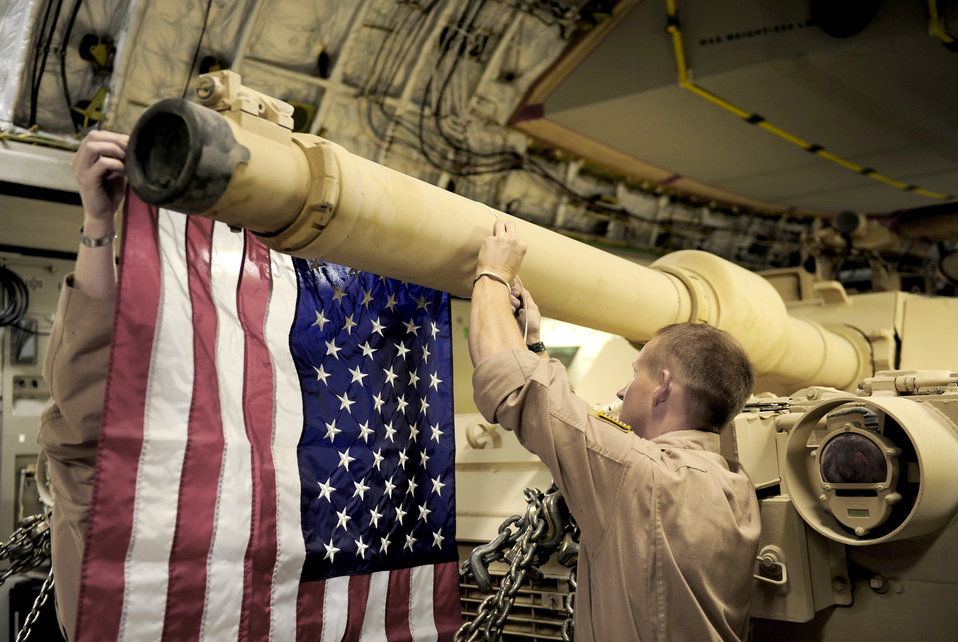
Abrams Transport

C-17 Globemaster III crewmembers tie an American flag onto a Marine Corps M1A1 Abrams tank at a base in Southwest Asia during an air transport Nov. 28, 2010, to Afghanistan in support of Operation Enduring Freedom on. The crew is assigned to the 816th Expeditionary Airlift Squadron.